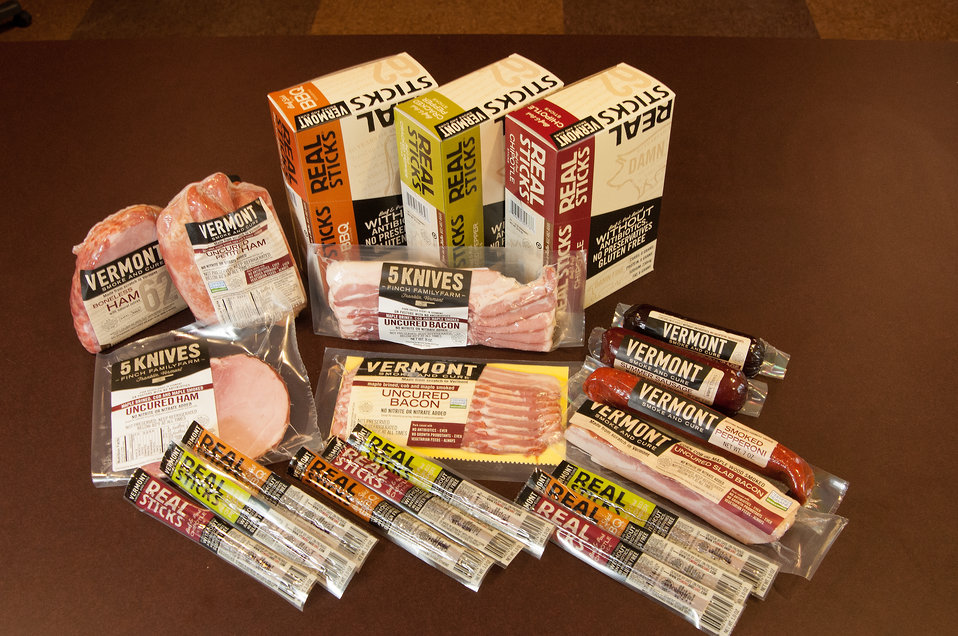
Vermont Smoke and Cure in Hinesburg, VT produces smoked and salt cured beef and pork products from local farms. Vermont Smoke and Cure received a U.S. Department of Agriculture (USDA) Rural Development (RD) Business and Industry Loan program and a Value Added Producer Grant. The loan and grant provided the capital resources necessary for business growth and job creation on Sep. 18, 2013.